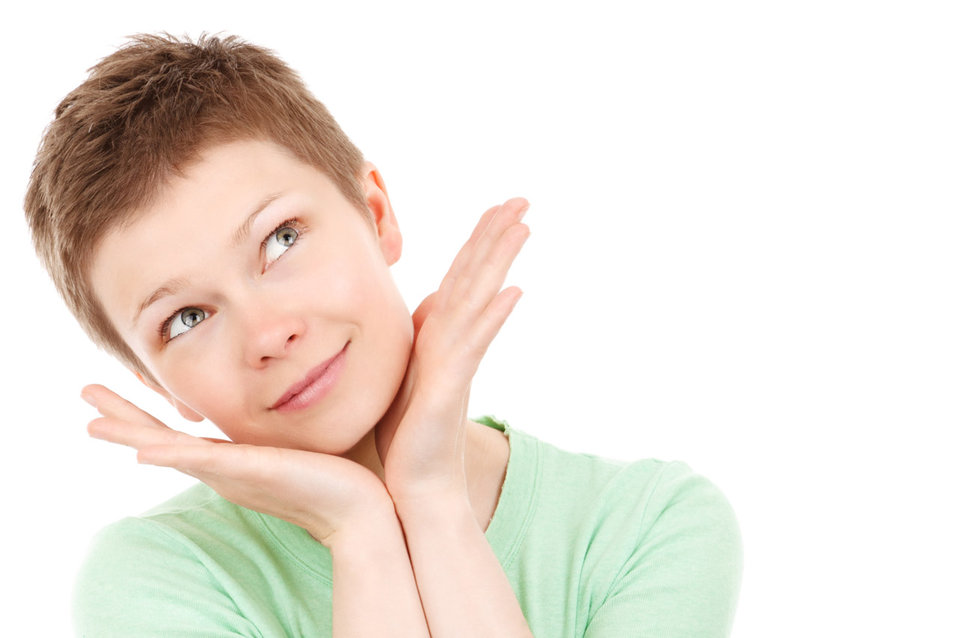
Daydreaming

Young woman daydreaming isolated on white background.